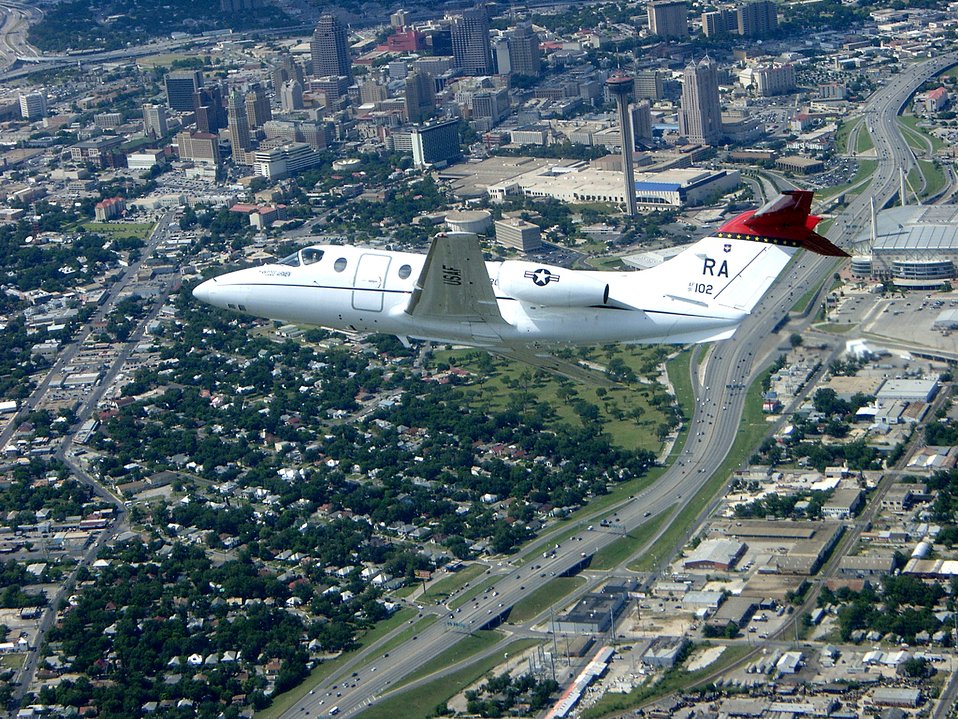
T-1A Jayhawk

A T-1A Jayhawk flies over the downtown San Antonio area. The aircraft is assigned to the 99 Flying Training Squadron at Randolph Air Force Base, Texas.